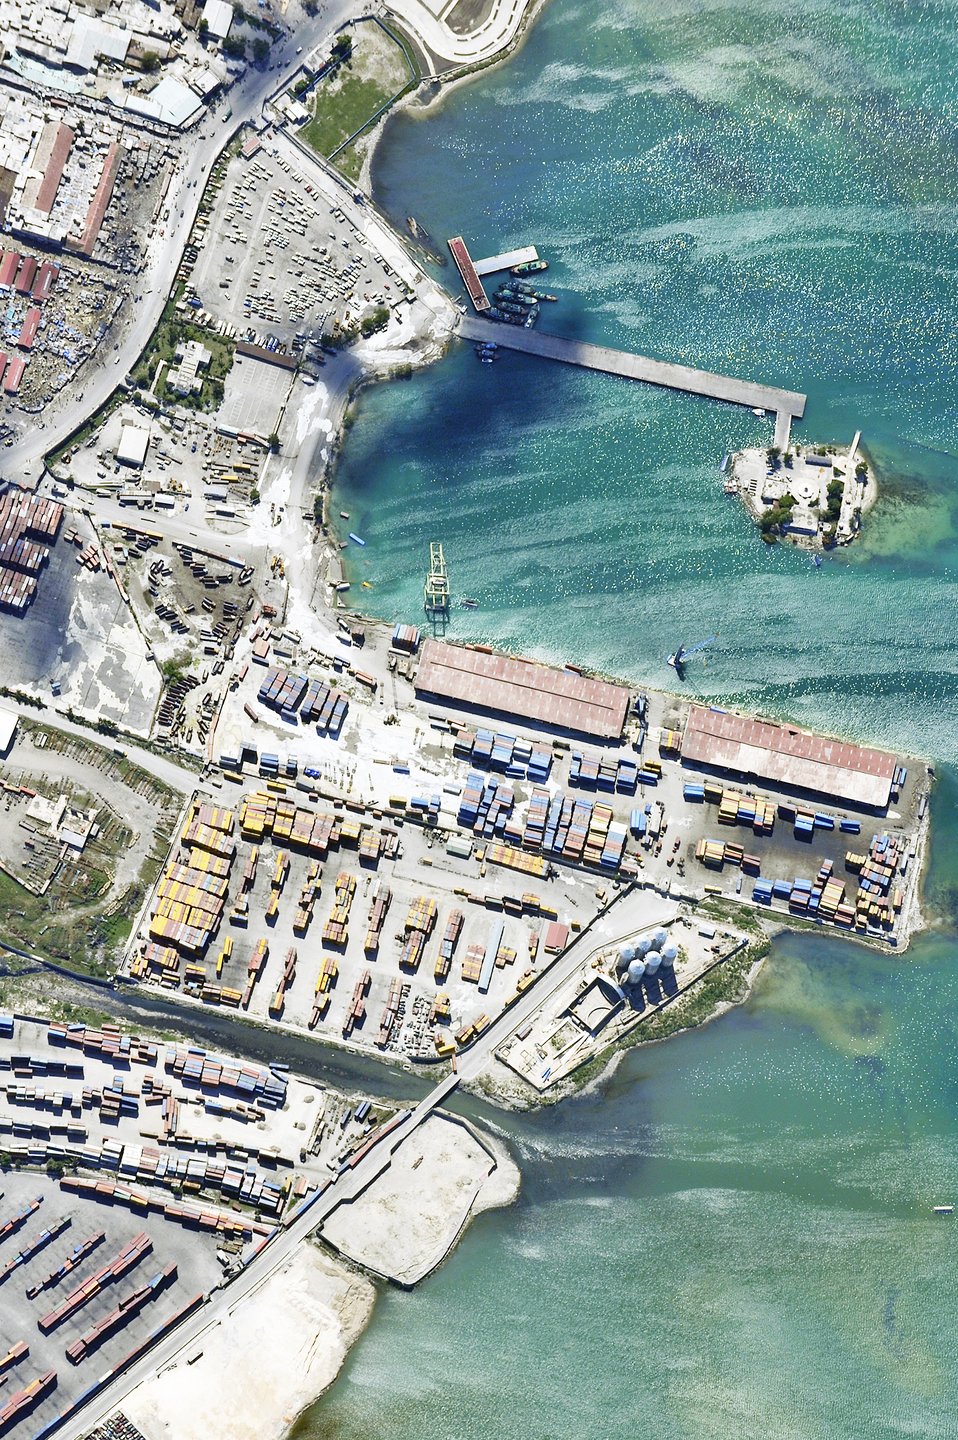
OC-135 crews assist from 15,000 feet

An aerial view of Port-au-Prince harbor in Haiti from an OC-135B Open Skies aircraft Jan. 14, 2010. The OC-135B flew over Haiti for more than three hours taking panoramic photos to help coordinate U.S. military support for the Haitian relief effort.